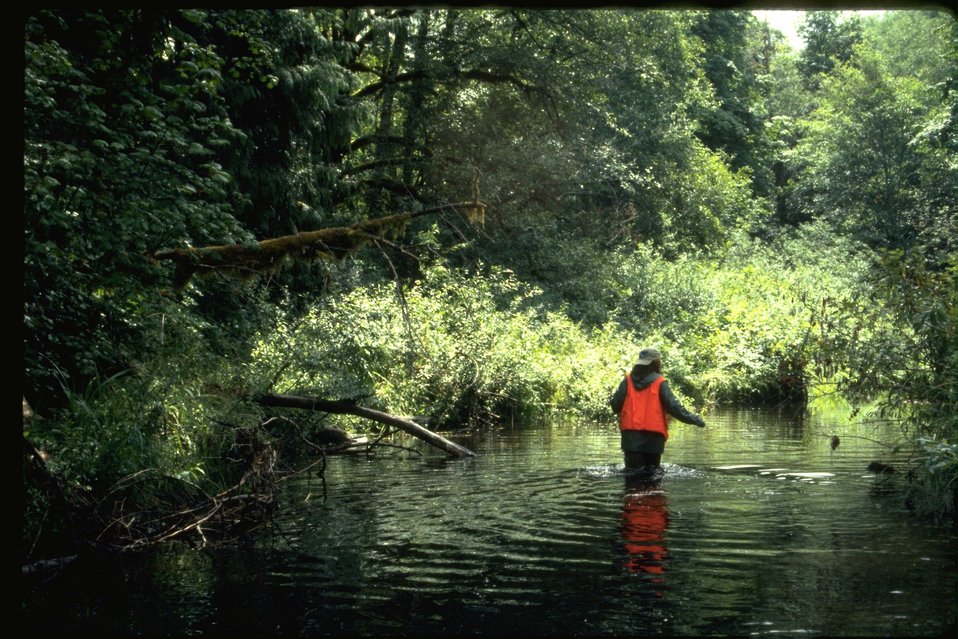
Sarah surveying Smith Creek during habitat study.